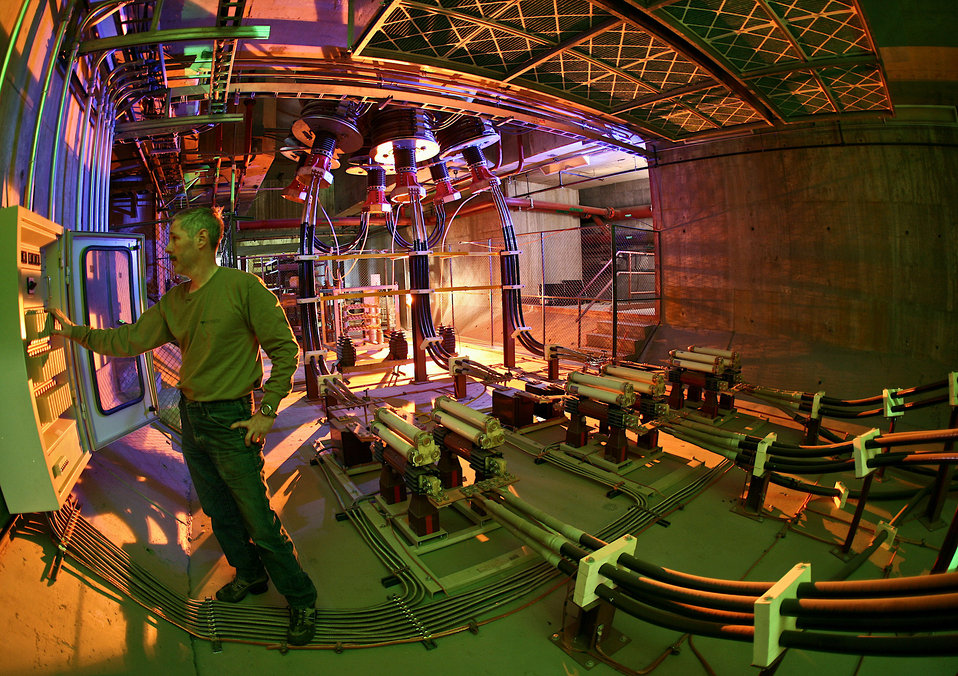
AT NATIONAL HIGH MAGNETIC FIELD LABORATORY, MIKE GORDON MAKES ADJUSTMENTS TO THE 600-MEGAJOULE AC GENERATOR, WHICH POWER MANY OF THE FACILITY'S MAGNETS.

Powerful magnets-some the most powerful in the world-are available to researchers visiting the National High Magnetic Field Laboratory's Pulsed Field Facility. Located high on a mesa at Los Alamos National Laboratory, the NHMFL-PFF is the only pulsed high field user facility in the country as well as the center of exceptional condensed matter physics research.